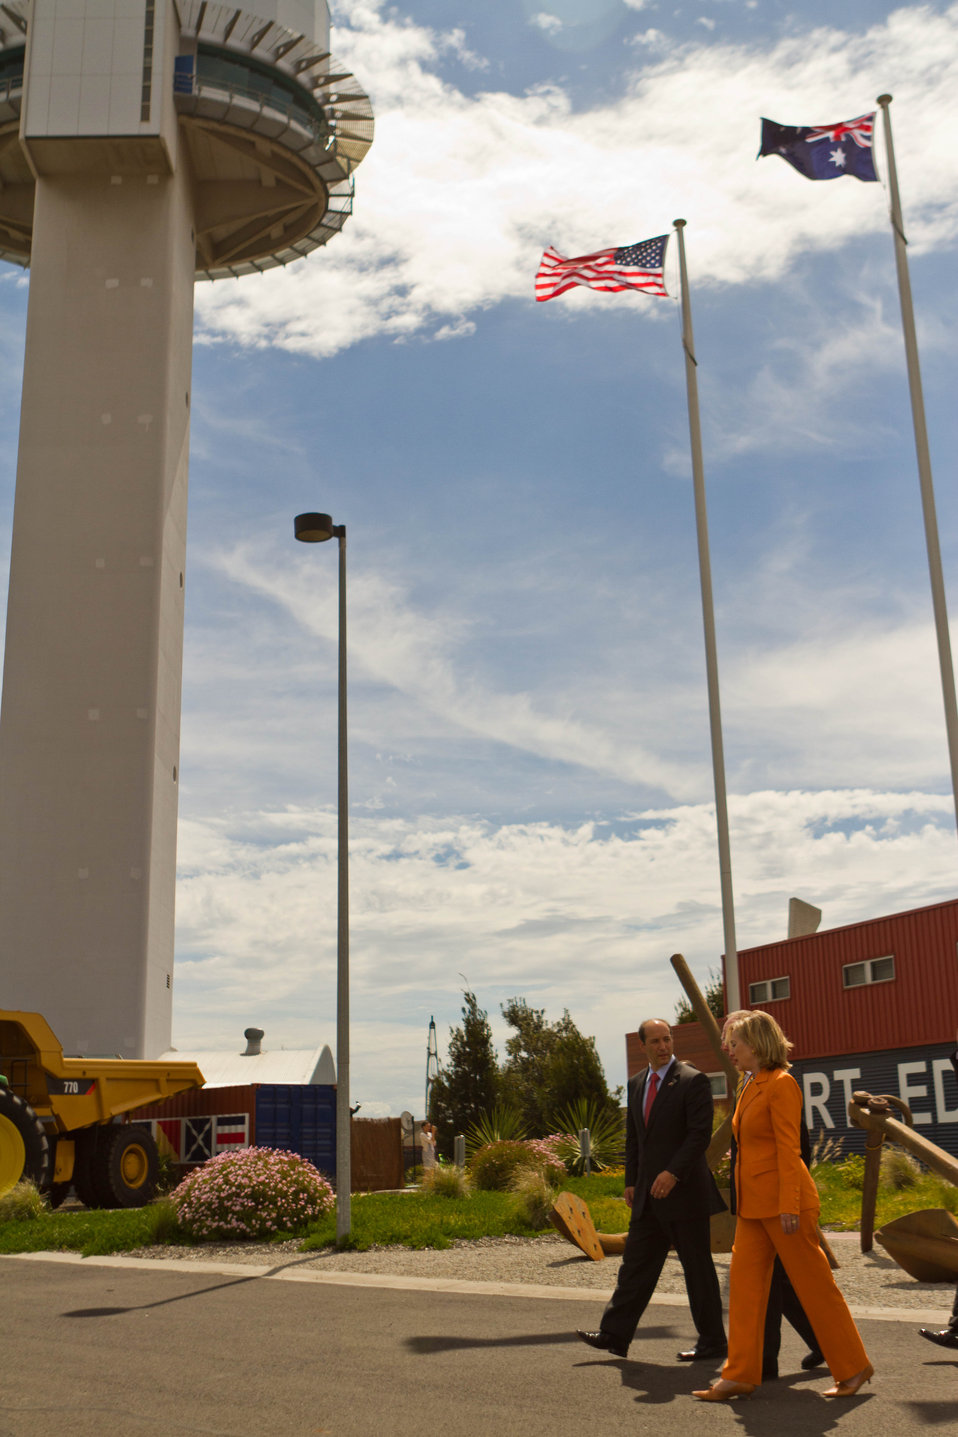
Ambassador Bleich and Secretary Clinton Walk in Melbourne

U.S. Secretary of State Hillary Rodham Clinton walks with U.S. Ambassador to Australia Jeff Bleich in Melbourne, Australia, on November 7, 2010.